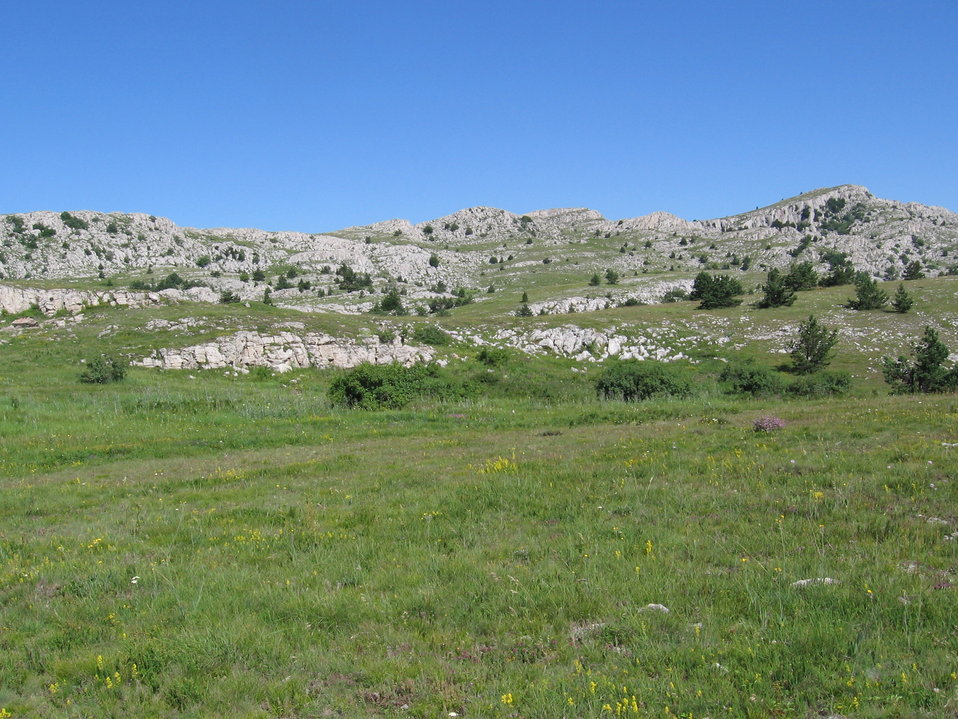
Українська: Бабуган